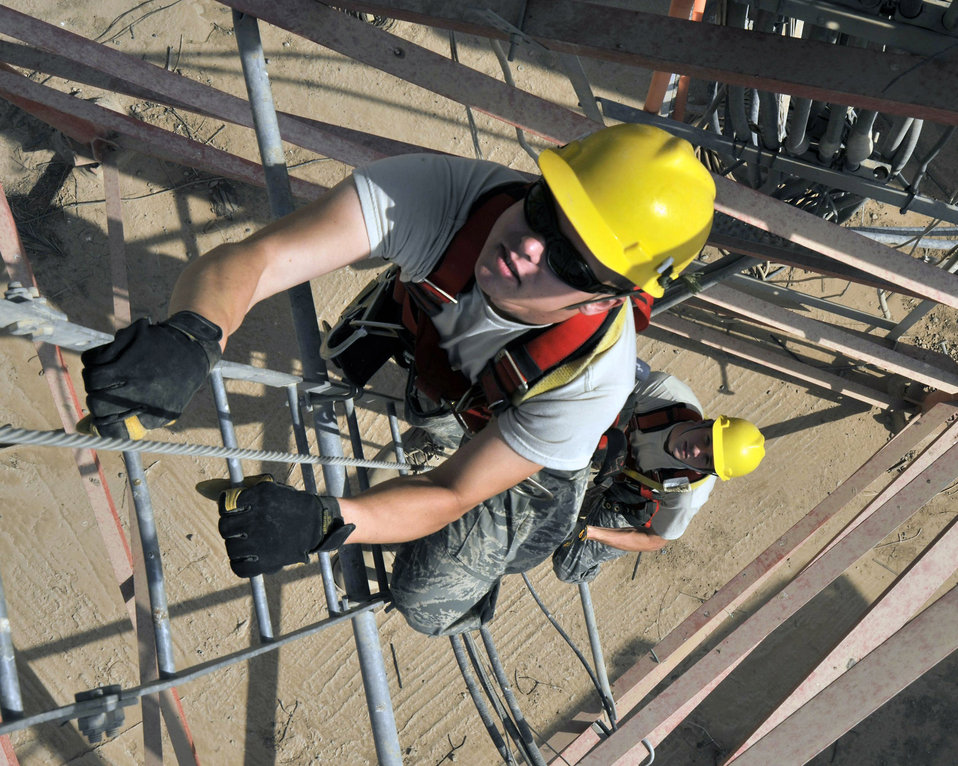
All eyes on you

Airmen 1st Class Cody Oleskow (foreground) and Ryan Arnold climb the 150-foot communications tower at Sather Air Base, Iraq, to service one of the many cameras used in the base security system. The Airmen are assigned to the 447th Expeditionary Communication Squadron.